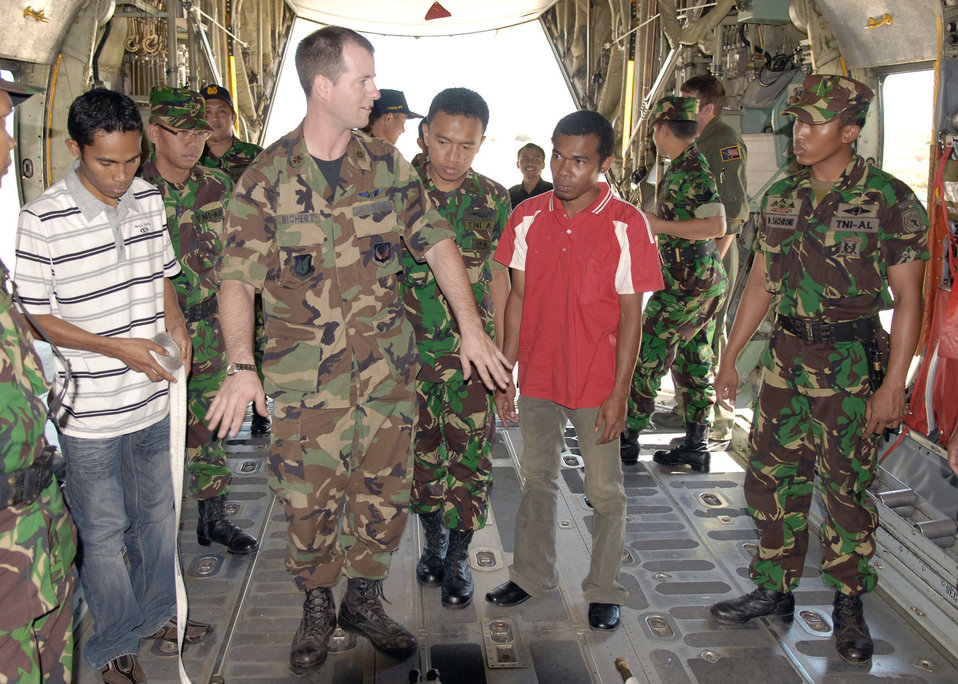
Aeromedical evacuation knowledge shared in Indonesia

Maj. Greg Richert briefs Indonesian military members and local doctors on how to air evacuate patients on C-130 Hercules July 17 at El Tari Air Force Base, Indonesia. Major Richert, a flight surgeon assigned to 13th Air Force at Hickam Air Force Base, Hawaii, spent three days sharing classroom and hands-on training with Indonesian medical professionals as part of Operation Pacific Angel 2009.